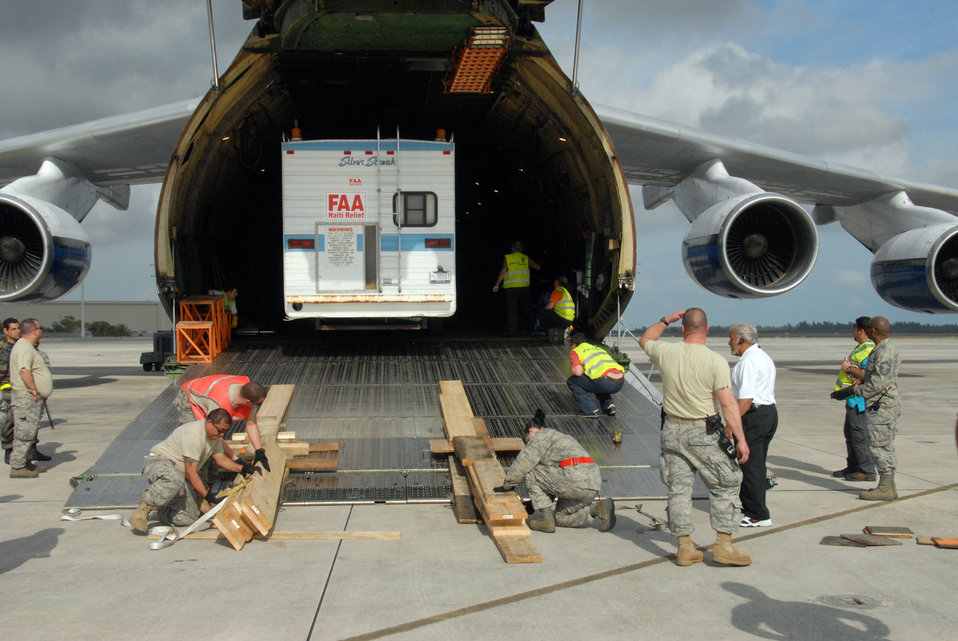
Air Force, FAA use Russian aircraft to move mobile air traffic control tower

A mobile air traffic control tower is loaded onto a Russian Antonov An-124 cargo plane at Homestead Air Reserve Base, Fla., Jan. 21, 2010. The mobile air traffic control tower will increase the efficiency of aid being delivered to earthquake victims in Haiti.